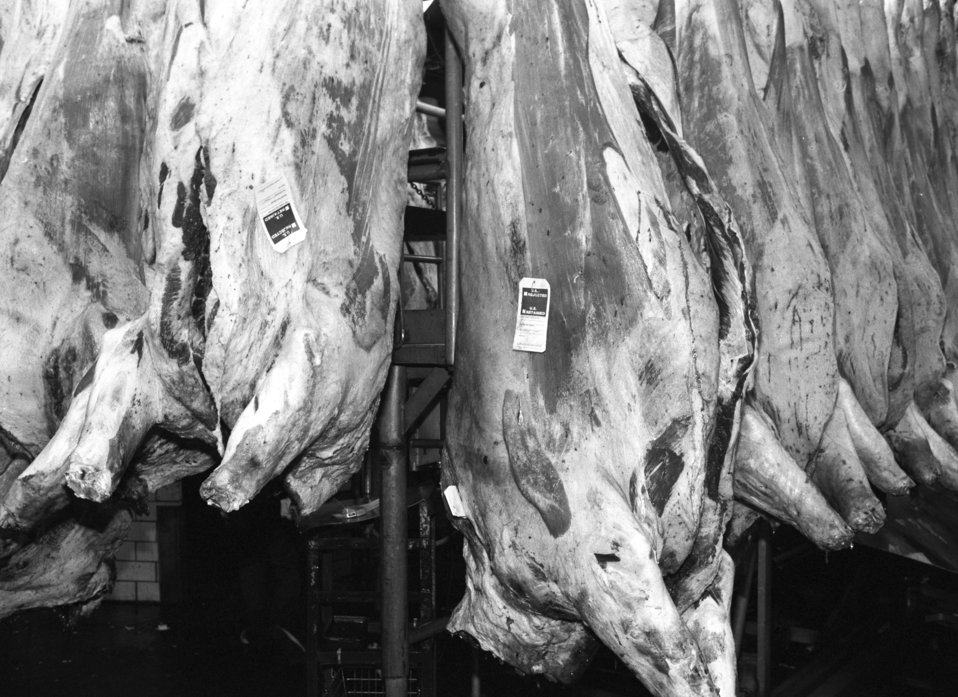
Processed beef in a meat processing are tagged for retention by U.S. Department of Agriculture (USDA) Food Safety Inspection Service (FSIS) inspectors using a Streamline Inspection System (SIS) in Plainview, TX on January 22, 1991.